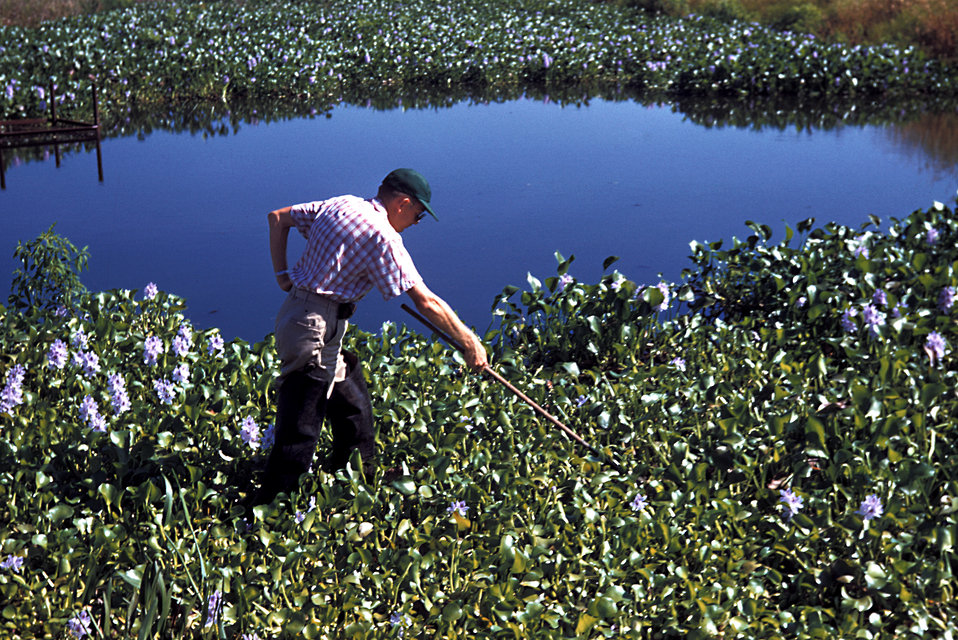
Fresh water lake mosquitoes are found amongst Water Hyacinth.